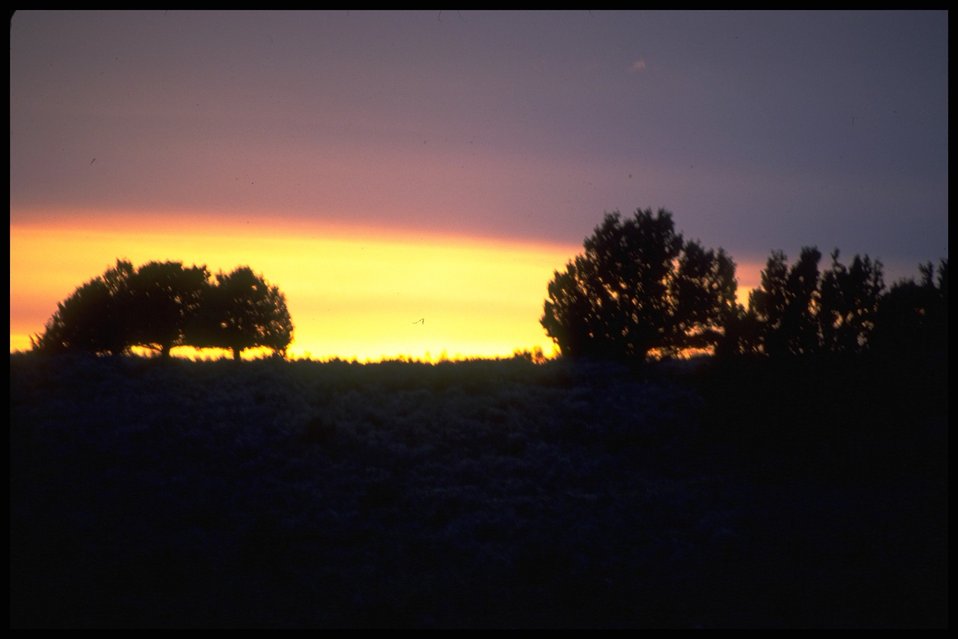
Lakeview District sunset.